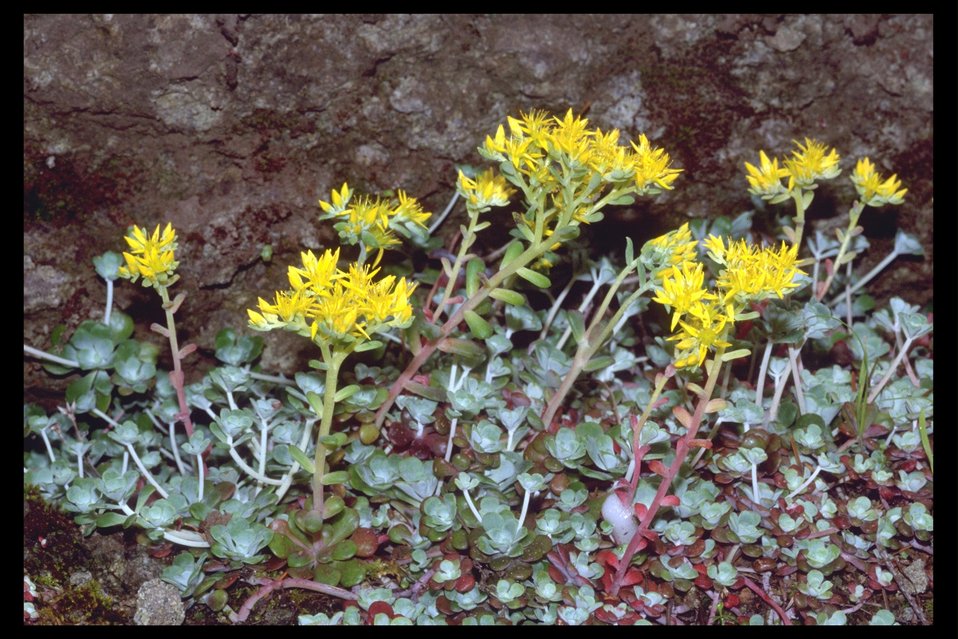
Close up of the Broadleaf Sedum, also called the Pacific Stonecrop, (Sedum spathulifolium) on a rock formation along Upper Trail Creek.